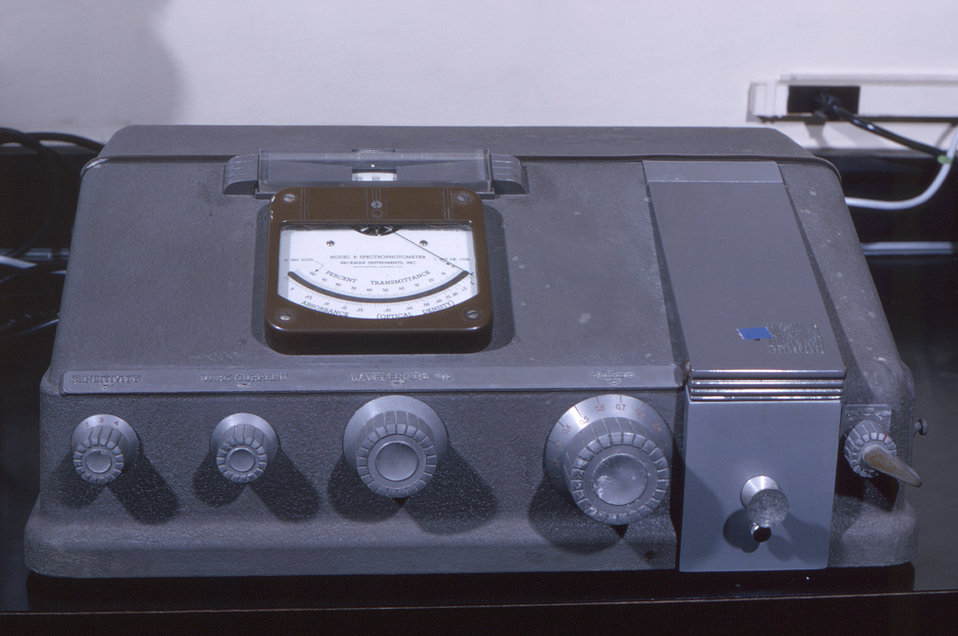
This historic image from 1964 depicts a Beckman Model B spectrophotometer that was used in the Centers for Disease Control's laboratories. A spectrophotometer measures the intensity of light as a function of its spectral constituents, including visible, near-ultraviolet, and near-infrared wavelengths.